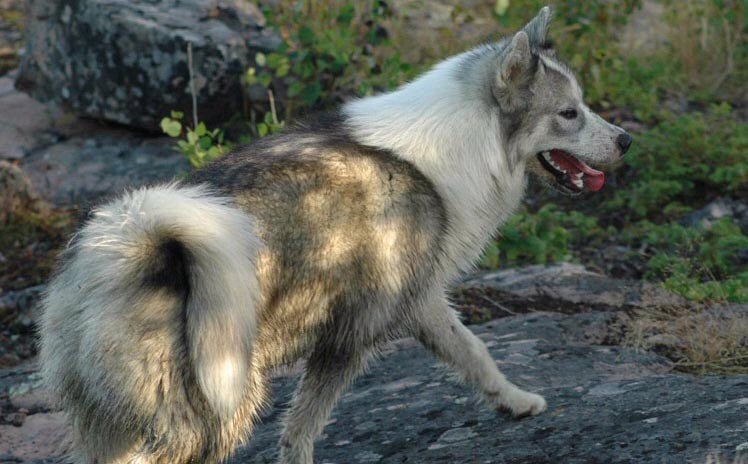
Canadian Eskimo Dog